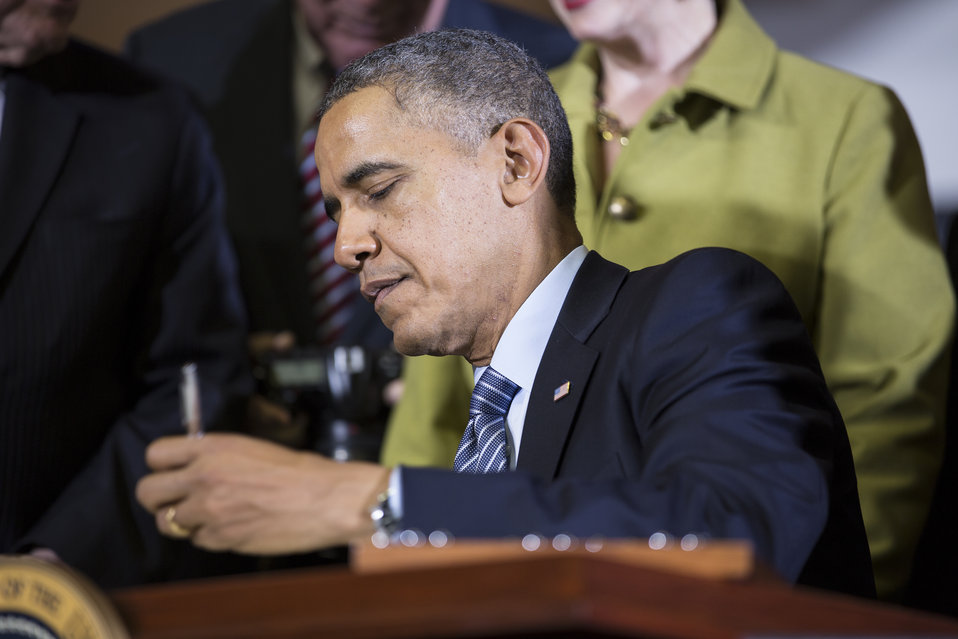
President Barack Obama signs the Agricultural Act of 2014 at Michigan State University in East Lansing, MI on Friday, Feb. 7, 2014. The President spoke on the importance of the act to America’s economy, detailing the progress over the last five years and how this bill will build on that progress.